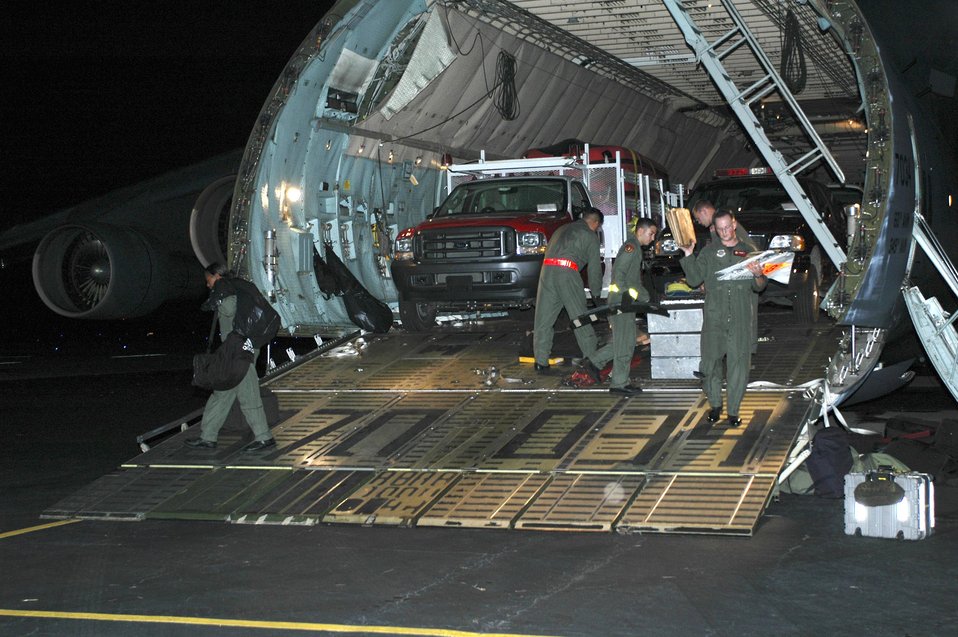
AMC answering humanitarian call in aftermath of Katrina

LAFAYETTE, La. -- Airmen with the 21st Airlift Squadron from Travis Air Force Base, Calif., prepare to unload emergency rescue equipment here from a C-5 Galaxy on Aug. 30. The equipment will be used for Hurricane Katrina relief operations in Mississippi and Louisiana.